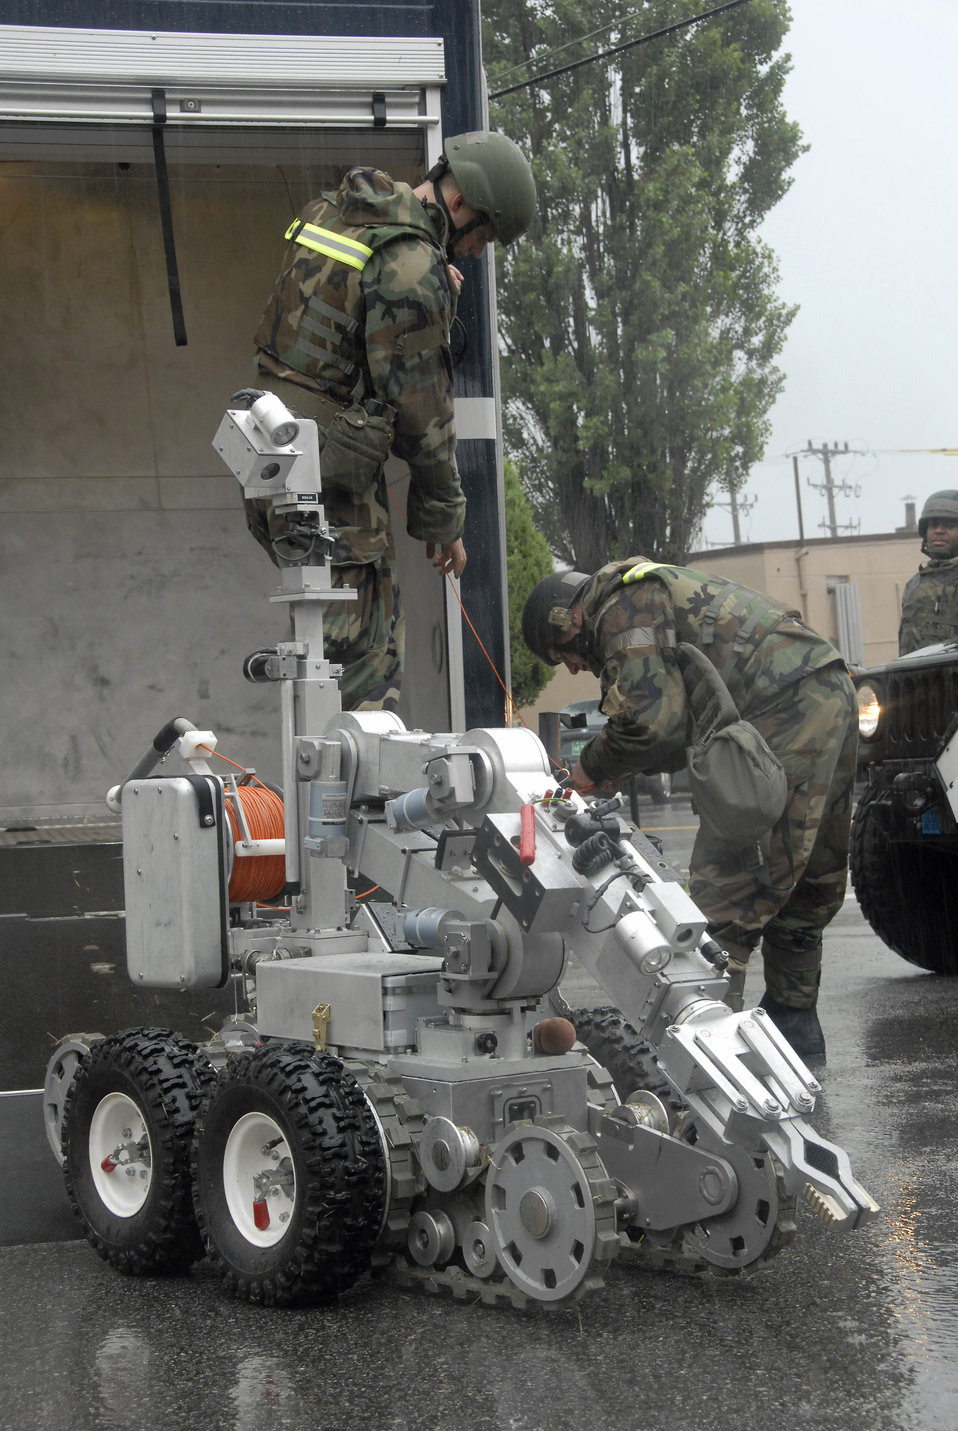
Handle with care

Airman Matthew Morris (left) and Tech. Sgt. Jared Worstell, explosive ordnance disposal Airmen with the 51st Civil Engineer Squadron at Osan Air Base, South Korea, prepare an F6A robot July 24 to remove a suspicious package at the base post office during a base-wide exercise. The robot is equipped with several television cameras for remote viewing and a dexterous arm for hazardous tasks.